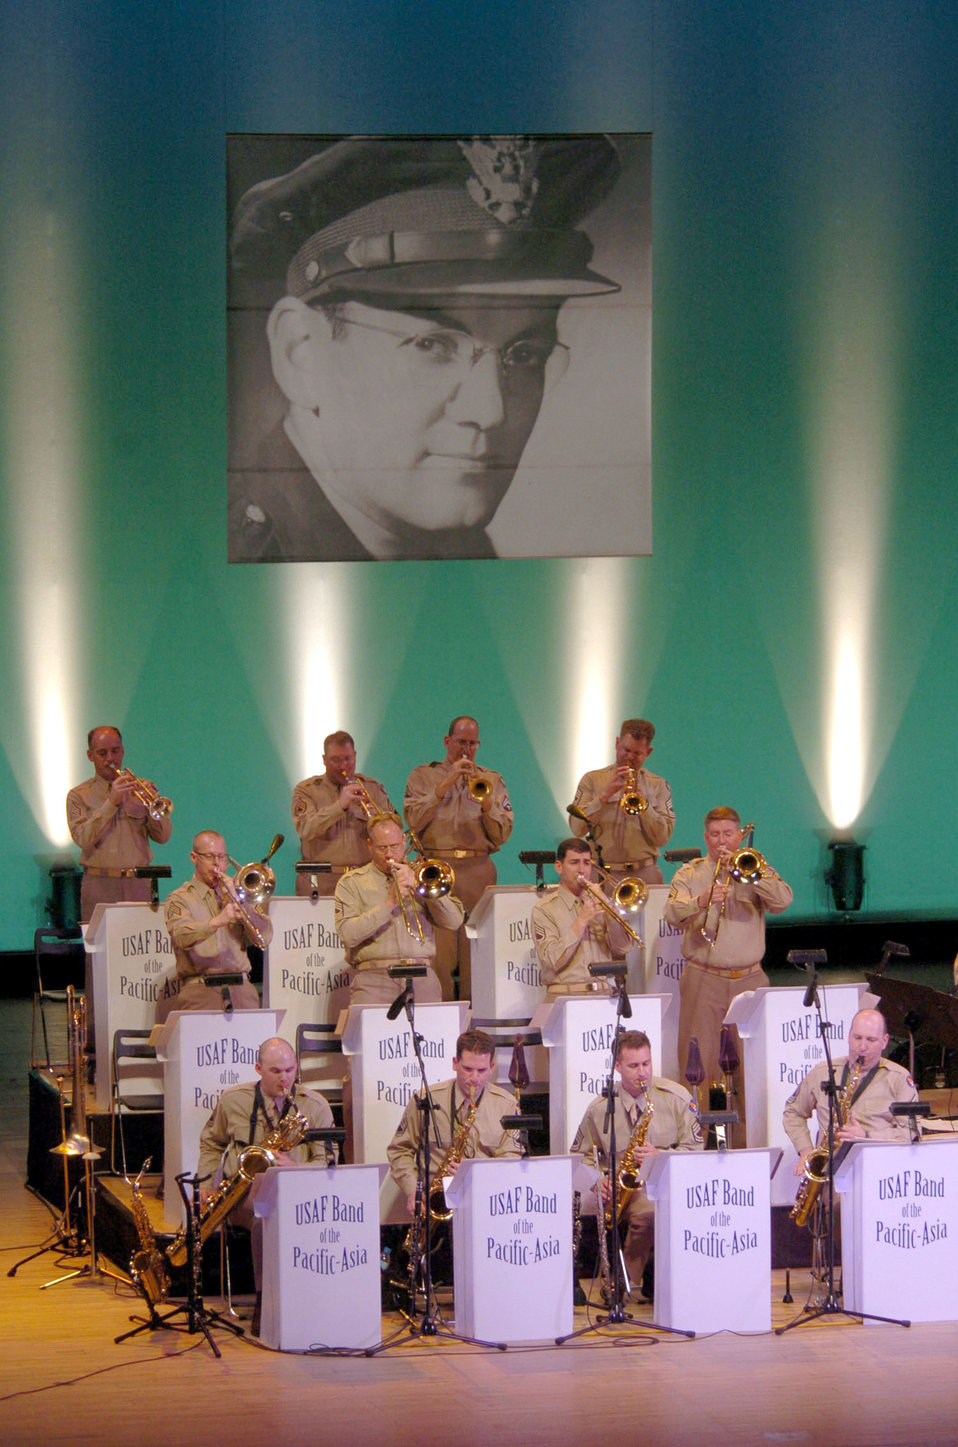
Band play in Hiroshima

HIROSHIMA, Japan -- The U.S. Air Force Band of the Pacific-Asia entertains a crowd during a concert here. The group wore traditional U.S. Army Air Corps uniforms as part of its trademark Glenn Miller show. The band is based at Yokota Air Base, Japan.